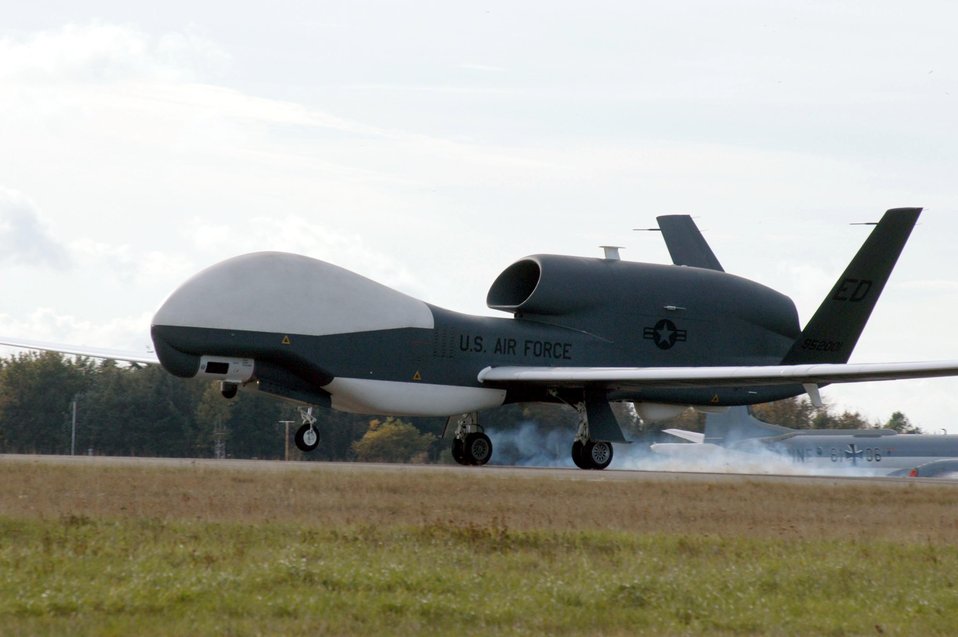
Global Hawk in Germany

A Global Hawk unmanned aerial vehicle lands at Nordholz Air Base, Germany, after a demonstration sortie. The vehicle returned to Edwards Air Force Base, Calif., on Nov. 7, 2003.